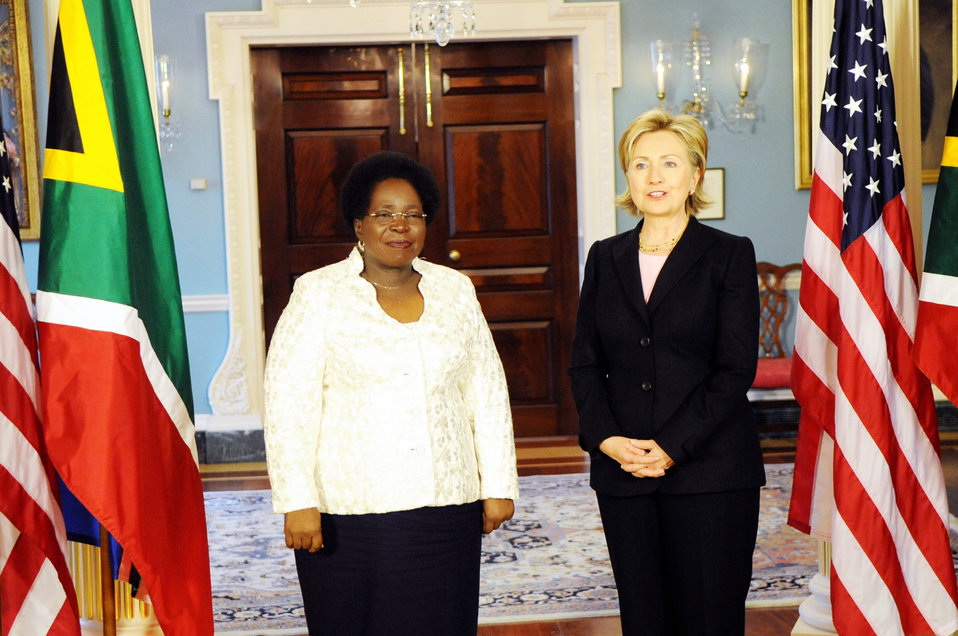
Secretary Clinton Meeting With South African Minister of Foreign Affairs

U.S. Secretary of State Hillary Rodham Clinton during bilateral meeting with South African Minister of Foreign Affairs H.E. Nkosazana Dlamini-Zuma of the Republilc of South Africa in Washington, DC March 19, 2009.